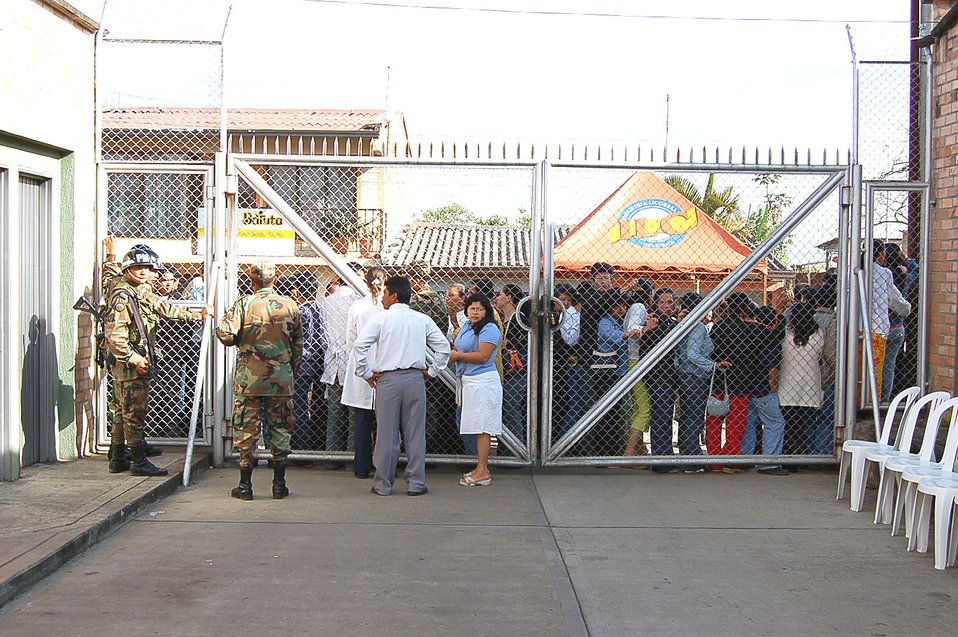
Airmen provide medical assistance in Colombia

People gather outside the Hospital Toribo Maya in Popayan, Colombia, Sept. 12 to receive treatment from a U.S. medical team performing a medical readiness training exercise.